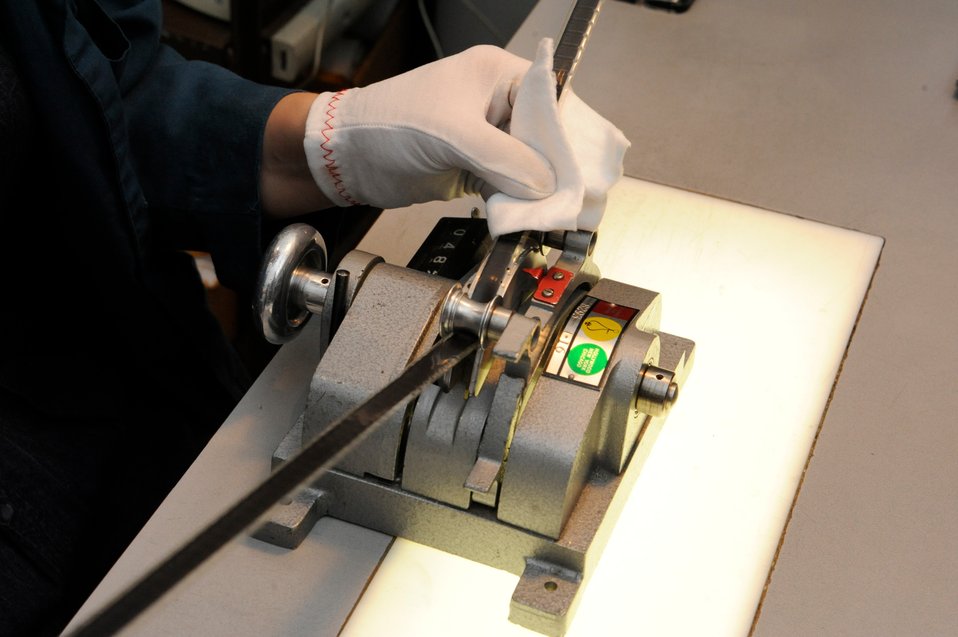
Audrey Amidon hand-cleaning of a film suffering from advanced stages of vinegar syndrome; Location: Archives 2 - Motion Picture Preservation Lab, College Park, MD